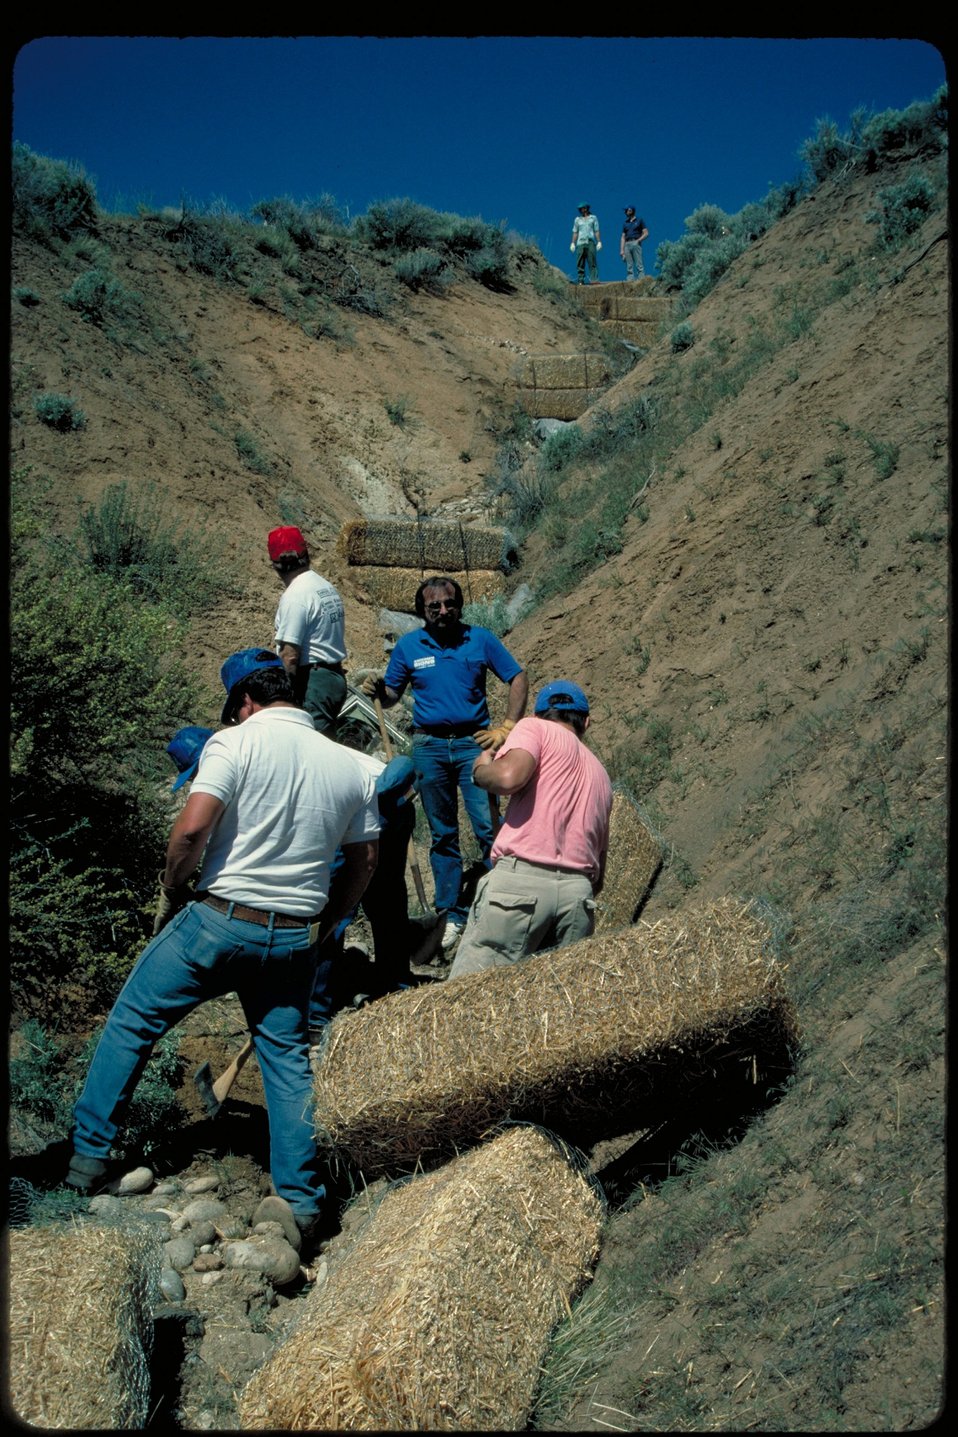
Boise Front volunteer project Four Rivers Field Office LSRD Lower Snake River District